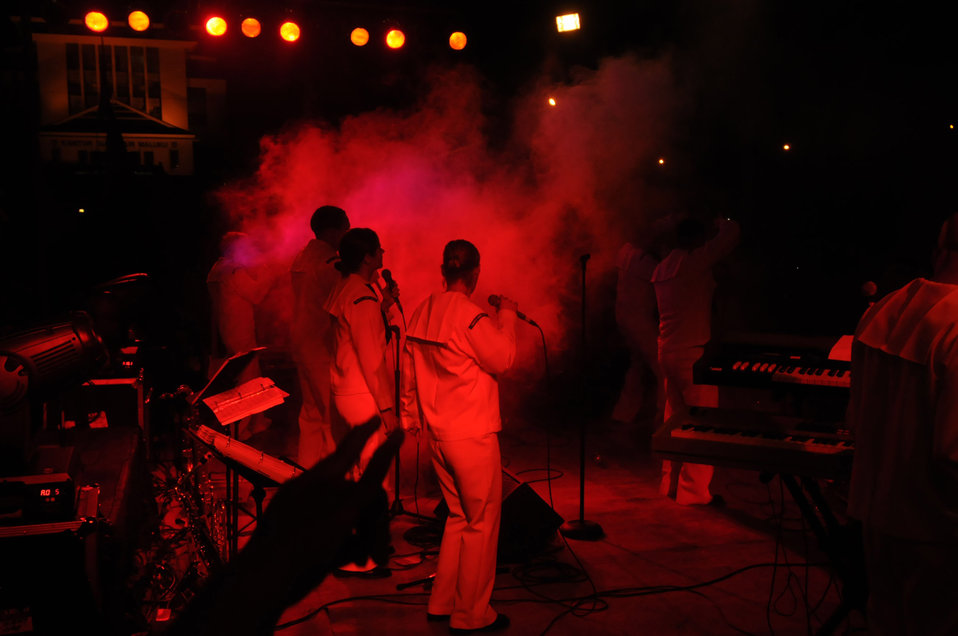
The U.S. Pacific Fleet Band Plays for Indonesian Spectators

The U.S. Pacific Fleet band, embarked aboard the Military Sealift Command hospital ship USNS Mercy (T-AH 19), plays for several thousand Indonesian spectators during a concert in downtown Ambon, Indonesia, on July 29, 2010. Mercy is in Ambon participating in Sail Banda 2010, a series of events hosted by the Government of Indonesia to promote the future of small islands. Mercy’s participation features medical and dental care clinics and construction projects in and around Ambon, as well as on Seram Island.